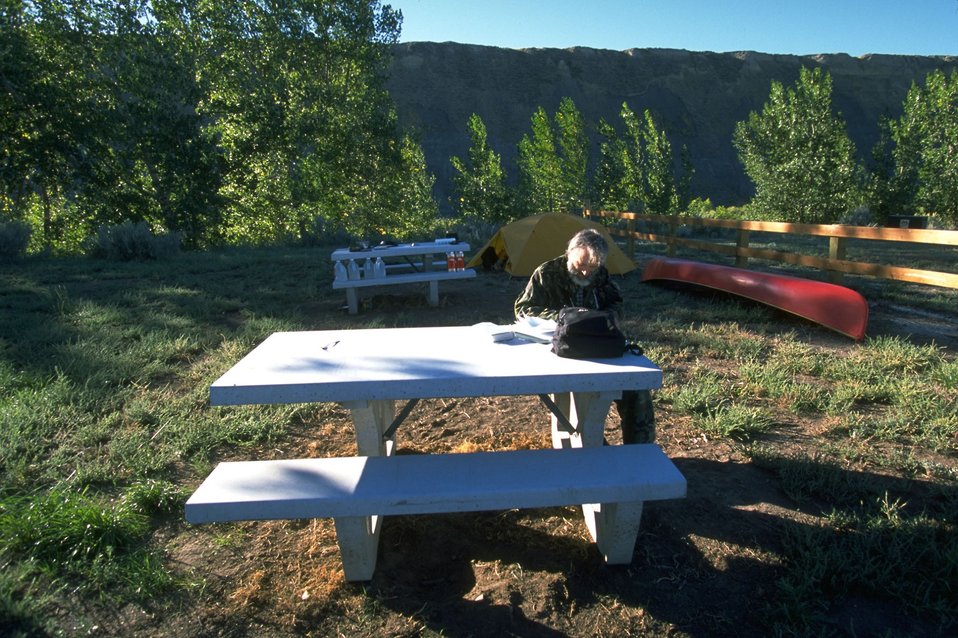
Canoe launch campgrounds at Fort Benton fairgrounds